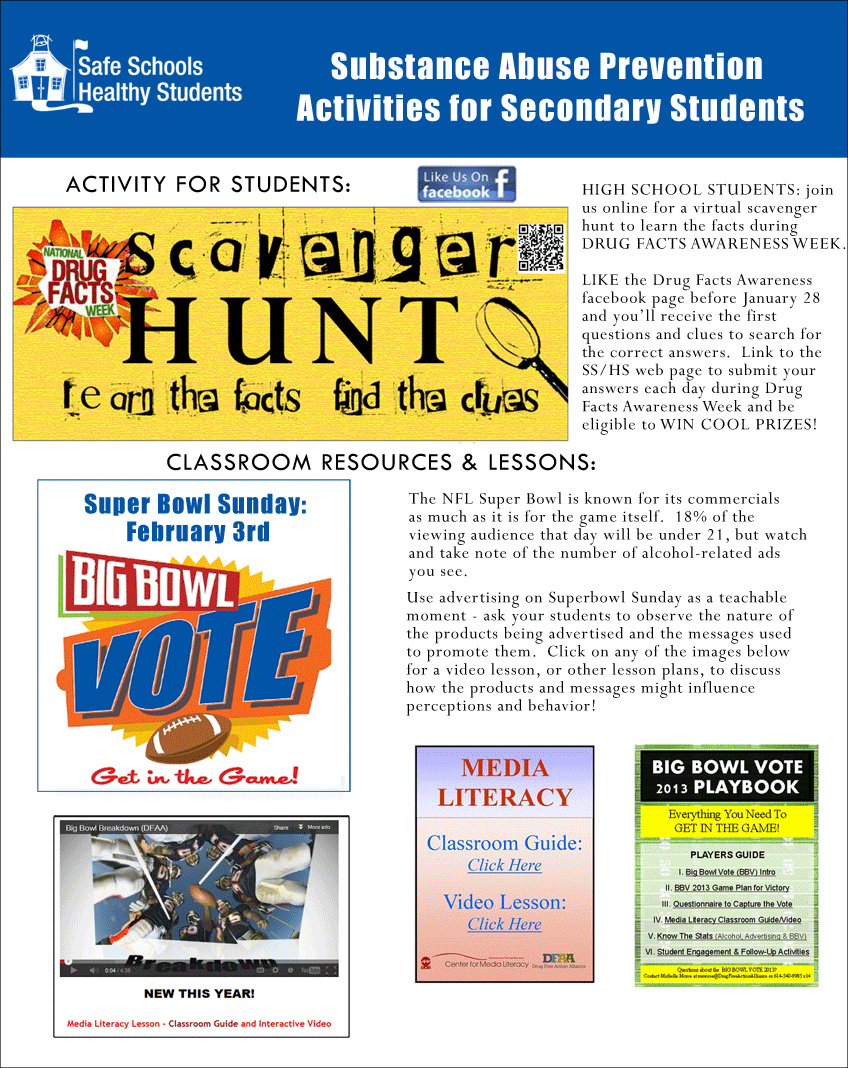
DrugFactsWeekEmail NDFW 2013

Charlottesville, Va. Safe Schools Healthy Students NDFW Events 2013.